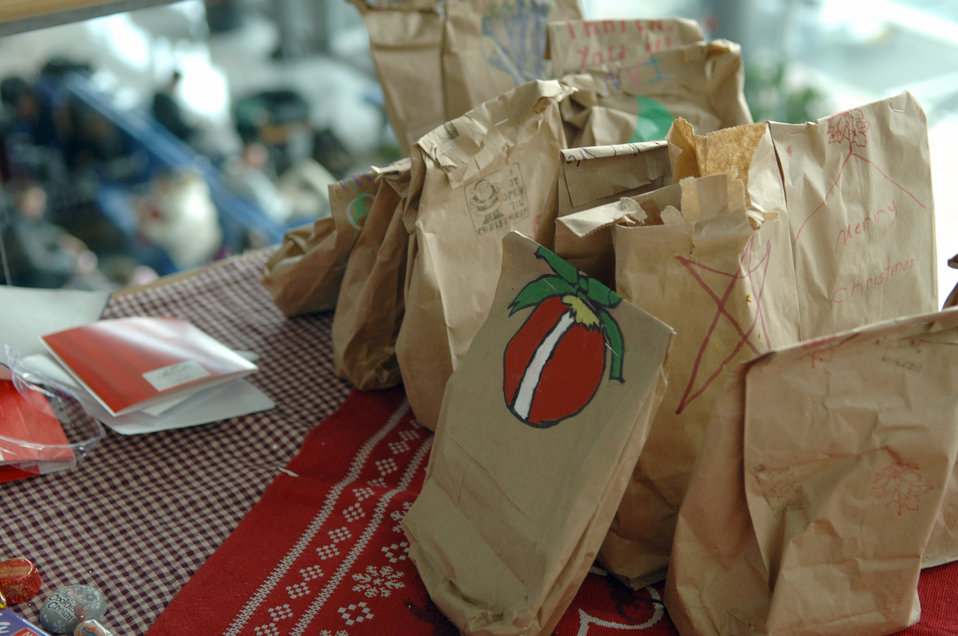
Project Rudolph

Holiday goody bags lie on the Project Rudolph table in the passenger terminal at Ramstein Air Base, Germany, Dec. 16, 2009, waiting to be given to deploying troops. Tawny Archibald Campbell and her family started Project Rudolph in 2006 to help spread holiday cheer to deployed U.S. servicemembers and the program has continued each holiday season since.